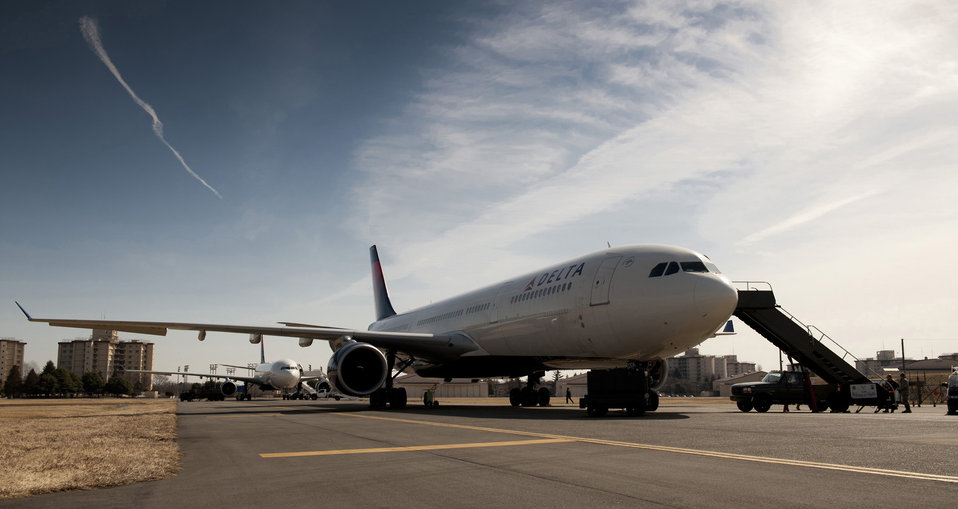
Delta Airlines flights take off safetly from Yokota

U.S. Air Force Airmen prepare two Delta Airlines passenger aircraft for boarding at Yokota Air Base, Japan, March 12, 2011. The aircraft were diverted to Yokota from Narita International Airport after an 8.9-magnitude earthquake struck off the eastern coast of Japan.